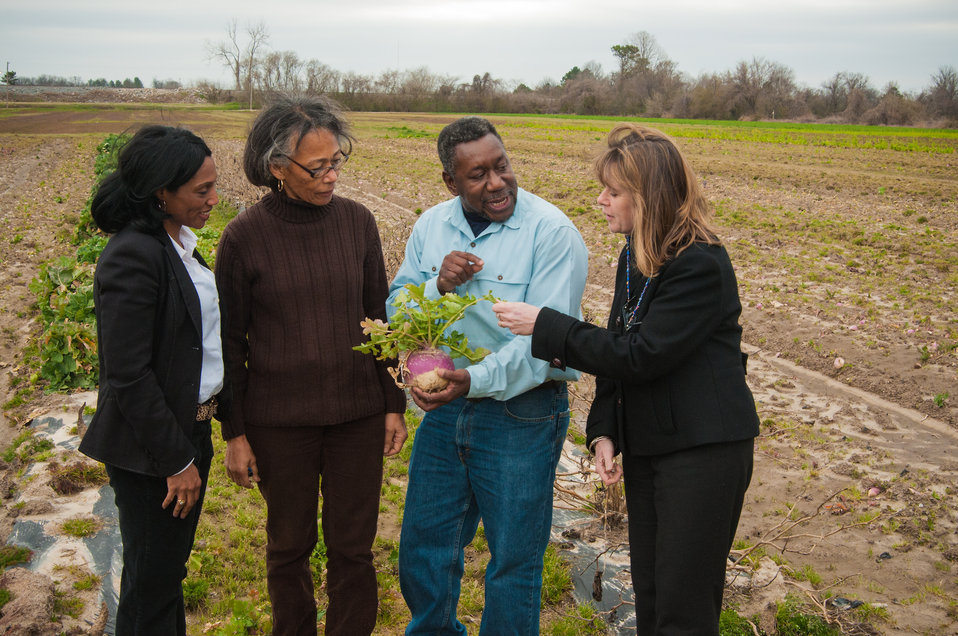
(L to R) U.S. Department of Agriculture (USDA) Farm Services Agency (FSA) Arkansas State Executive Director Linda Newkirk, East Arkansas Enterprise Community, (EAEC) Inc. consultant Mildred Barnes-Griggs, USDA Arkansas Strike Team Leader Charlie Williams, and Heifer International representative Hillary Haddigan, look at a turnip grown at the EAEC in Forrest City, AR on Mar. 4, 2013. The EAEC is a beneficiary of technical assistance available for crop production, management, harvesting, food security, value added products and marketing options through the Seeds of Change Implementation Plan. Thanks to the efforts USDA in partnership with Heifer International (an International organization whose mission is to work with communities to end hunger and poverty and care for the Earth) and various for-profit and non-profit organizations the Seeds of Change Implementation Plan was organized to use sustainable agriculture to build food systems in the Arkansas Delta. The program has evolved into the Arkansas Delta Seeds of Change (ADSOC) Initiative.